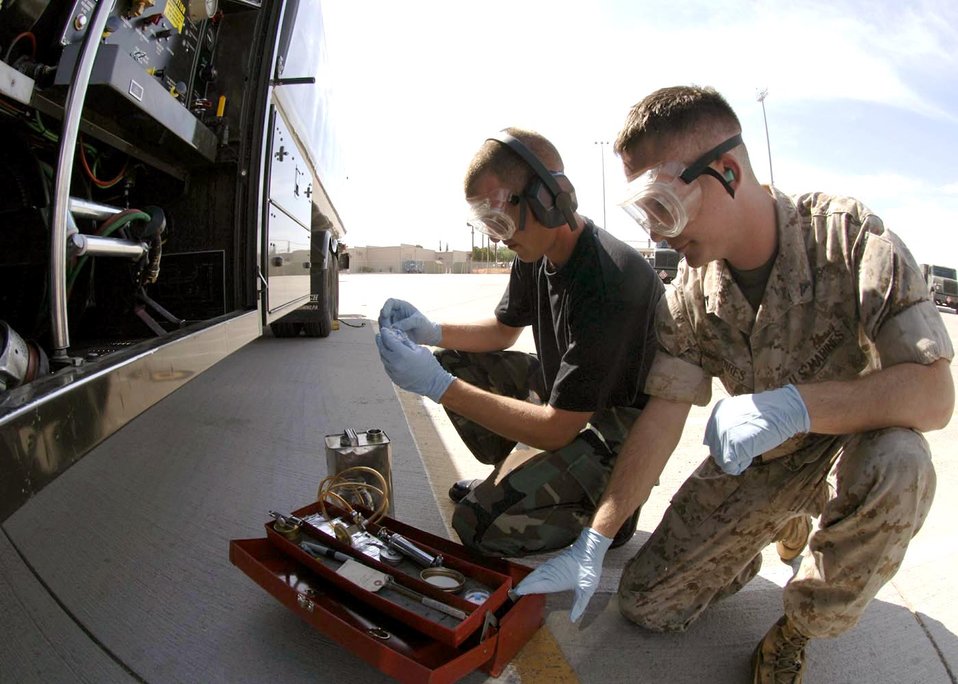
Quality fuel

DAVIS-MONTHAN AIR FORCE BASE, Ariz. -- Senior Airman Brian Macmillan (left) and Marine Lance Cpl. Chris Squires perform quality testing on a refueling unit. Airman Macmillan is a fuels analysis laboratory technician with the 355th Logistics Readiness Squadron, and Corporal Squires is a reservist performing two weeks of training here.